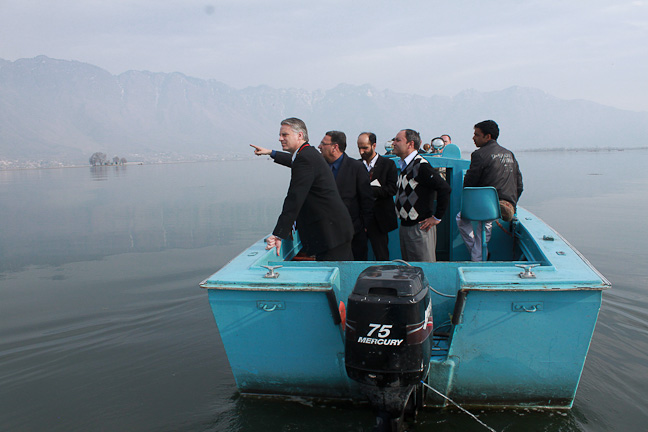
Ambassador Roemer Visits Jammu and Kashmir

U.S. Ambassador to India Timothy J. Roemer visits Jammu and Kashmir, March 17-18, 2011, to engage and listen to the people and connect with the youth of the state.